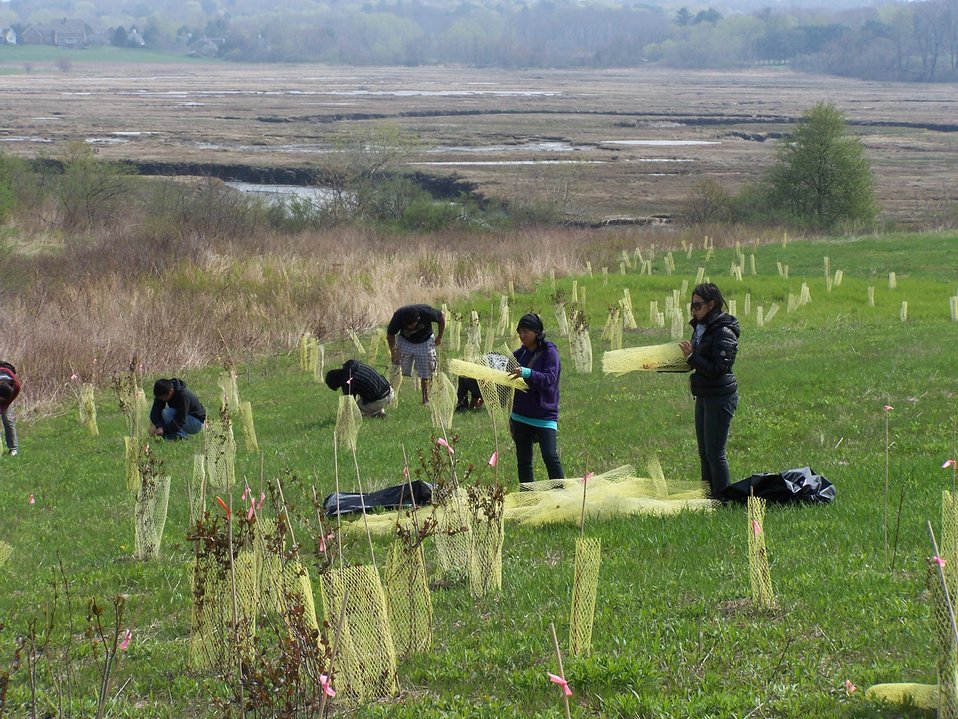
Restoring homes for New England cottontails

Volunteers and staff plant native shrubs at Libby Field in the Spurwink River Division of Rachel Carson National Wildlife Refuge to help restore habitat for New England cottontail.